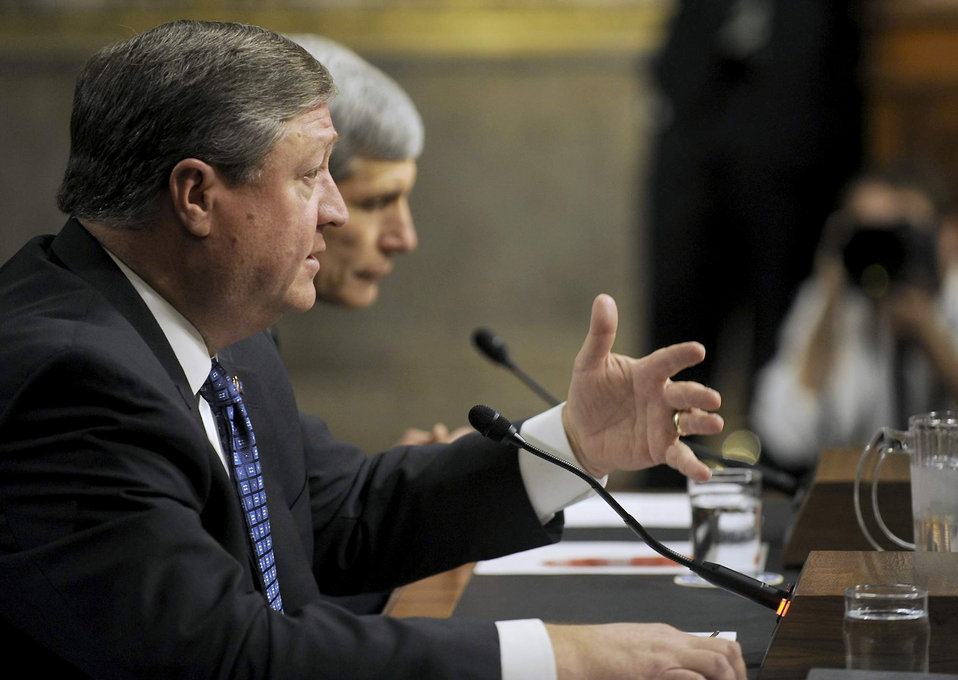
2012 Budget

Secretary of the Air Force Michael Donley answers a question on the Air Force's fiscal 2012 budget proposal during a Senate Armed Services Committee hearing March 17, 2011, in Washington, D.C.